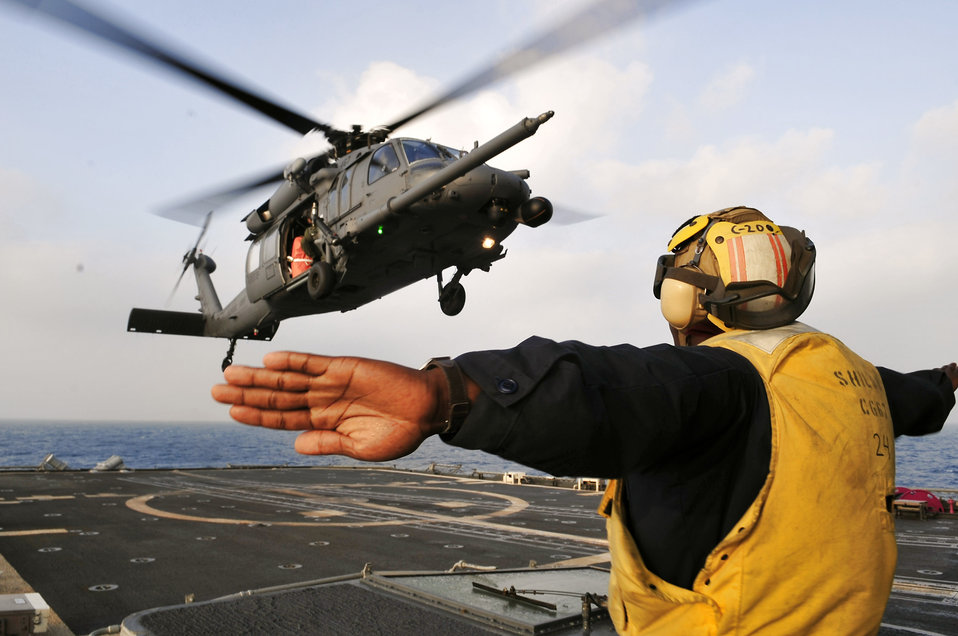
U.S. forces participate in Hong Kong exercise

An HH-60G Pave Hawk from the Alaska Air National Guard's 210th Rescue Squadron performs deck landing qualifications aboard the forward-deployed guided-missile cruiser USS Shiloh during preparations for Hong Kong Search and Rescue Exercise 2008 Oct. 26 off the coast of Hong Kong. The annual exercise involved units from the U.S., Hong Kong and the People's Republic of China.